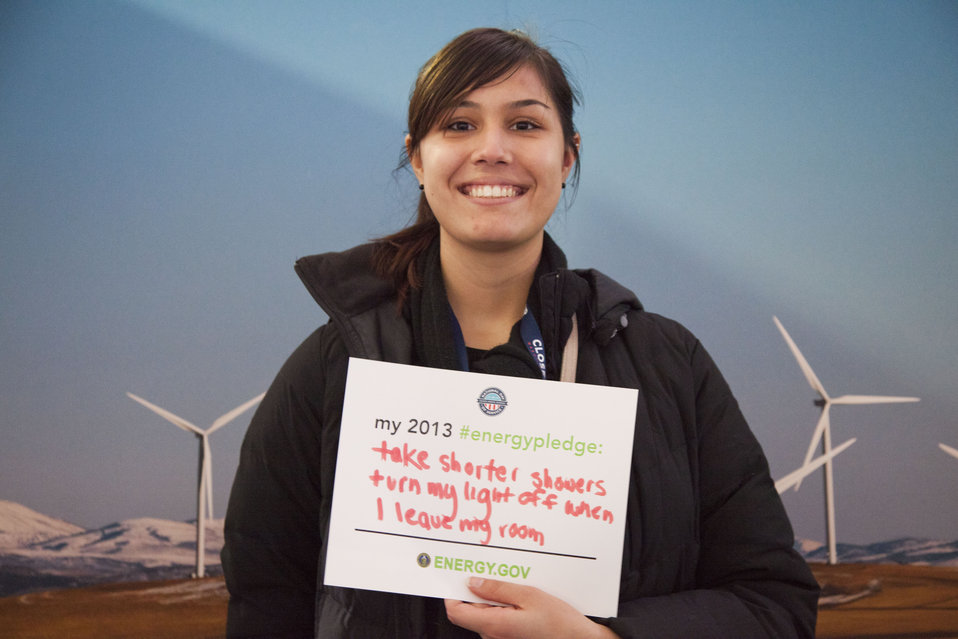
What's your #energypledge?